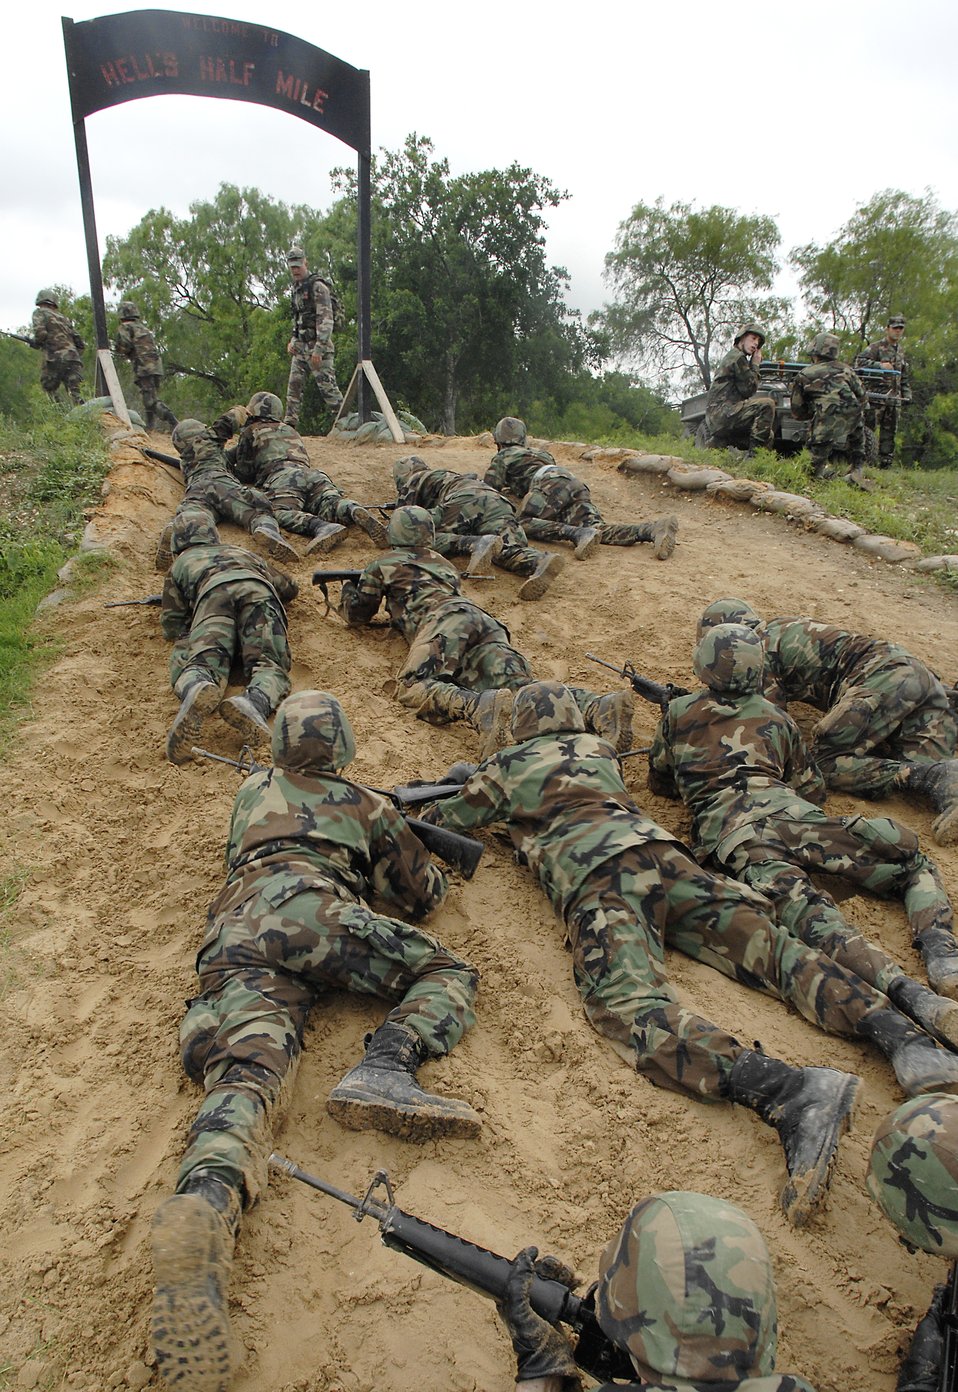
Airmen live, learn warrior ethos

Basic trainees navigate through the tactical assault course at the field training site on Lackland Air Force Base, Texas on May 2. This half-mile course, consisting of numerous obstacles, tests the trainees' newly-acquired defensive tactics skills and enforces the need to properly communicate with their wingmen.